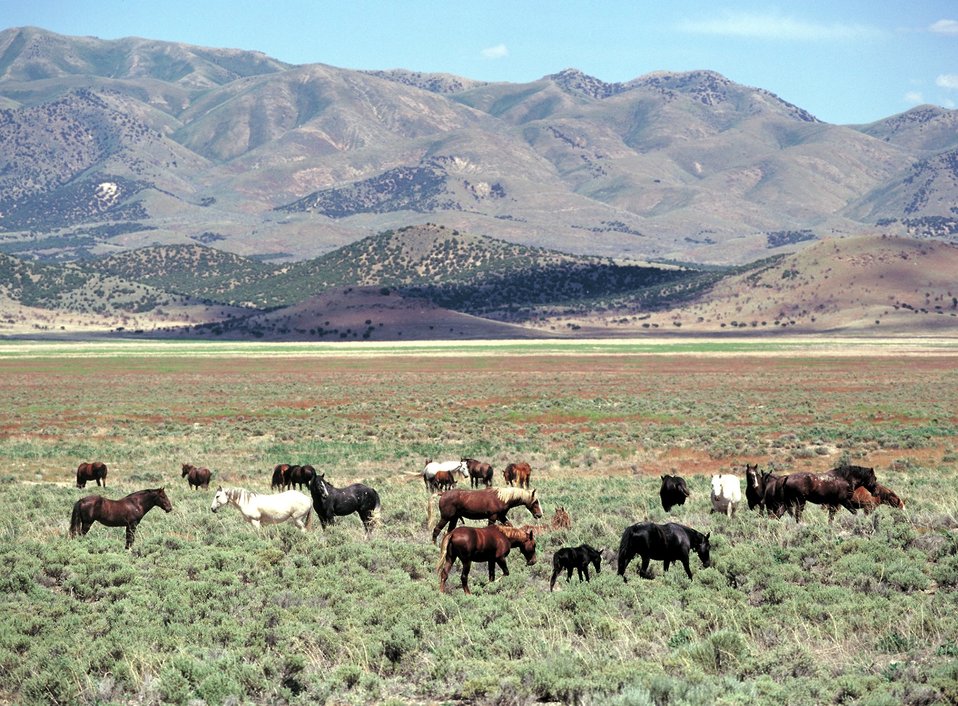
Onaqui Herd near Dugway, Utah.